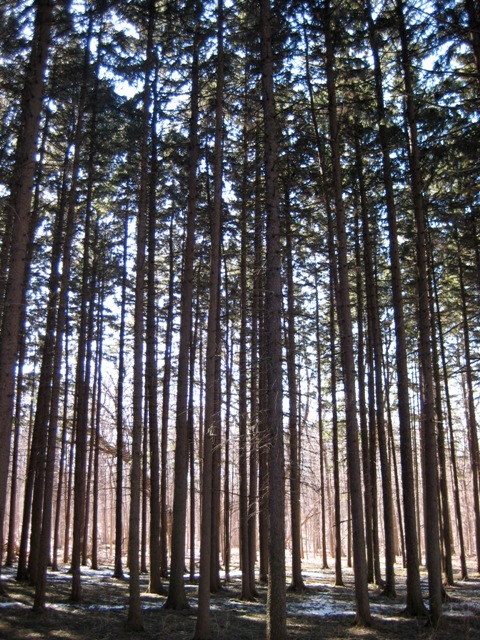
Uploaded by request of Frederique Kahn

Taken at Morton Arboretum in Illinois